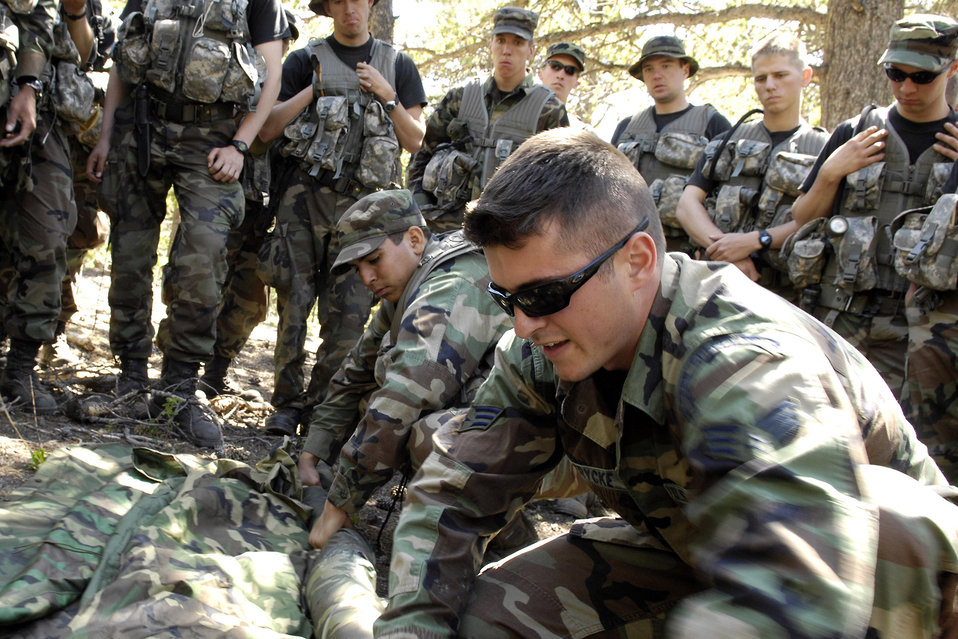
Cadets train in survival, evasion, resistance, escape

Air Force Academy cadets focus on Senior Airman Adam Derycke as he assembles an evasion pack during Combat Survival Training June 9 in Saylor Park, Colo. Airman Derycke is a survival, evasion, resistance and escape, or SERE, specialist from the 552nd Operational Support Squadron at Tinker Air Force Base, Okla.